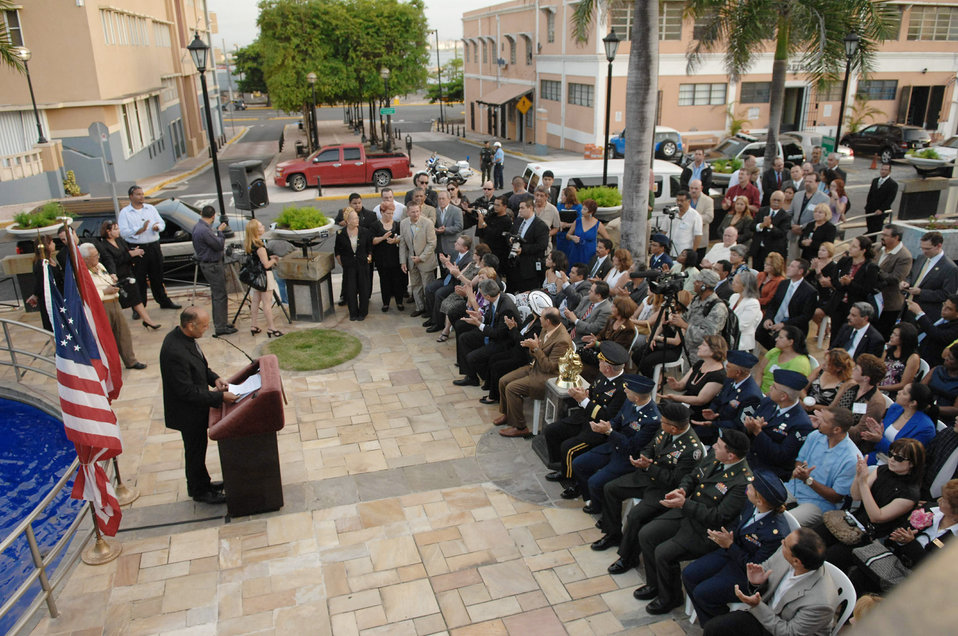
Reservists honor fallen servicemembers

A crowd attends the Puerto Rico Memorial Wreath Laying Ceremony at El Capitolio 's El Monumento de la Recordacion, the location of the 2009 League of United Latin American Citizens convention and exposition July 14 at San Juan, Puerto Rico.